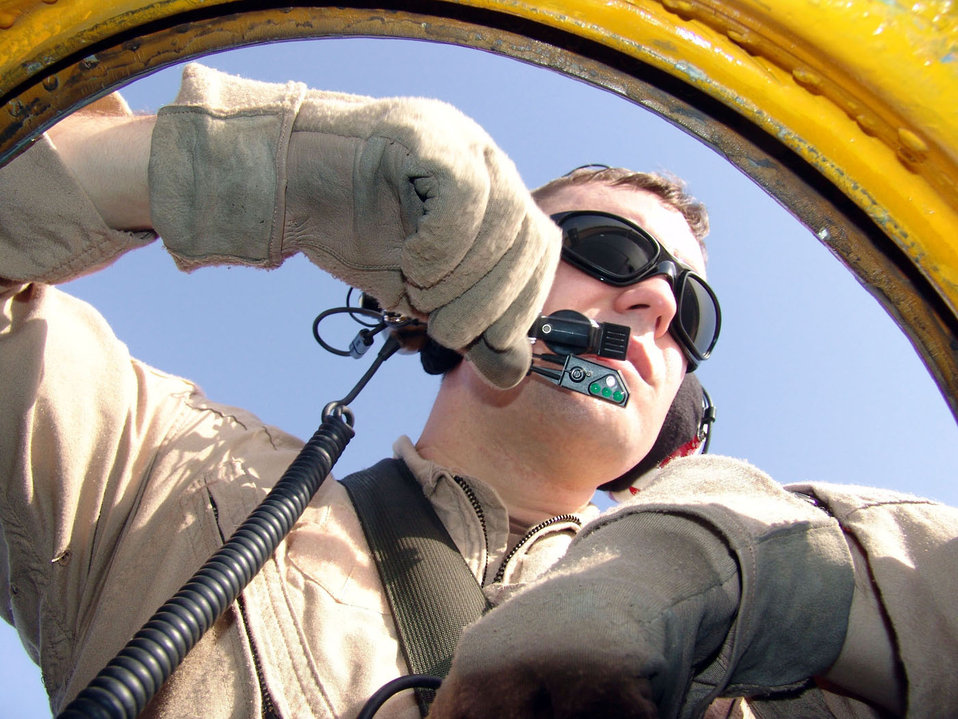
Airmen support Soldiers with airdrop

SOUTHWEST ASIA -- Capt. Jared Pavlich watches for ground traffic from the top hatch of a C-130 Hercules before an airdrop mission. Aircrews delivered 48 bundles containing about 69,000 pounds of food rations to U.S. and Iraqi Soldiers engaged in combat operations against anti-Iraqi forces. Captain Pavlich is a C-130 navigator with the 737th Expeditionary Airlift Squadron at a forward-deployed location and is from Pope Air Force Base, N.C.